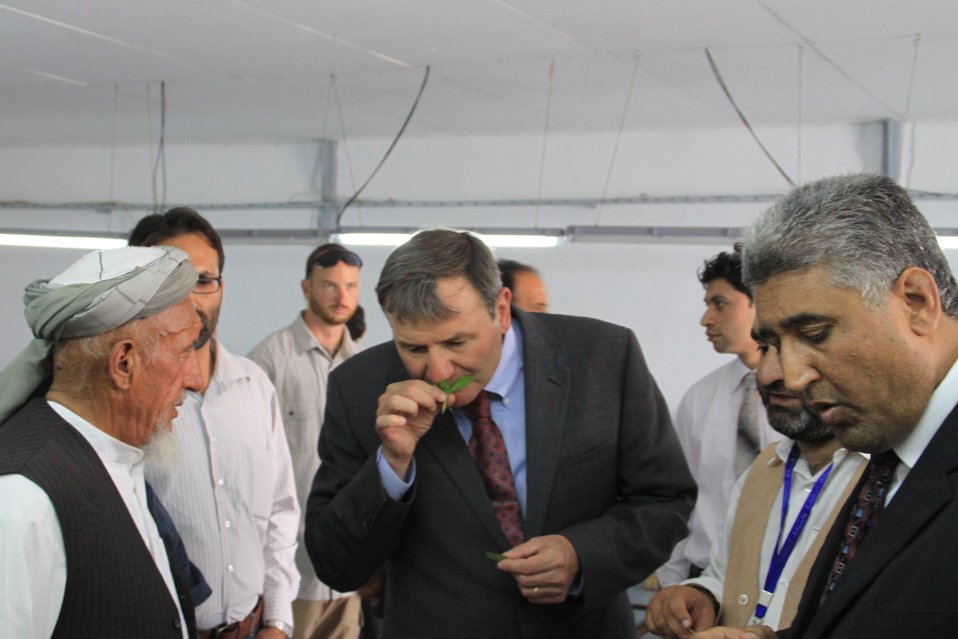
Badam Bagh Farm